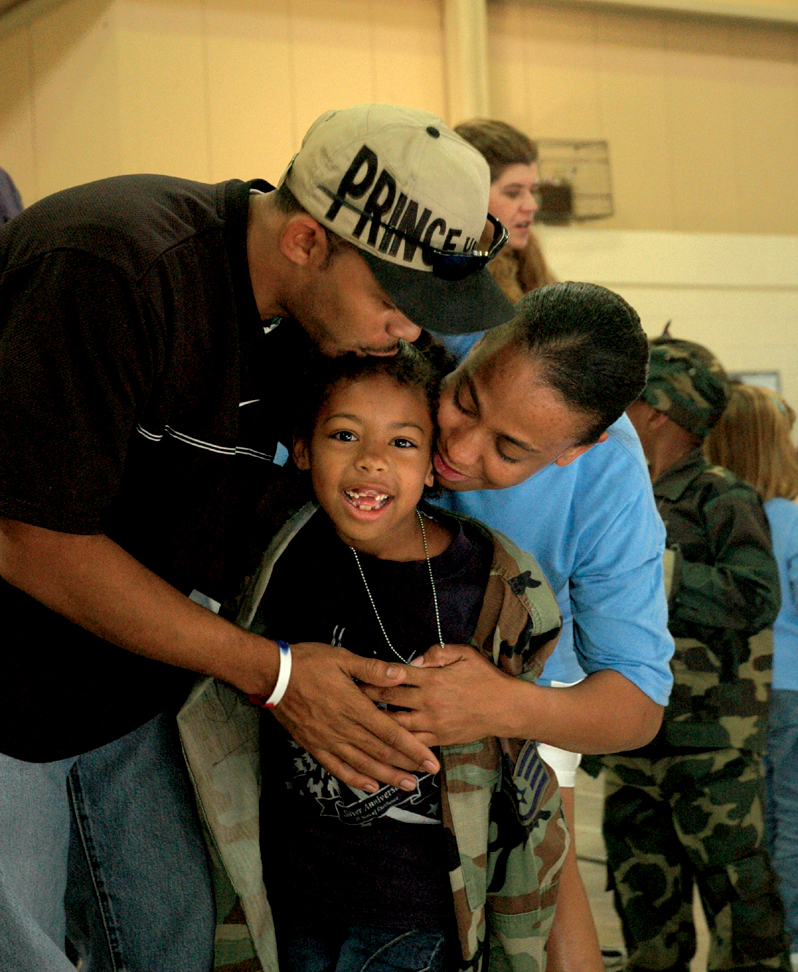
Children experience 'deployment' firsthand

TYNDALL AIR FORCE BASE, Fla. (AFPN) -- Sienna Woods, 7, gets a big welcome-back hug from her parents, Angie and Staff Sgt. Frank Woods, of the 83rd Fighter Weapons Squadron.